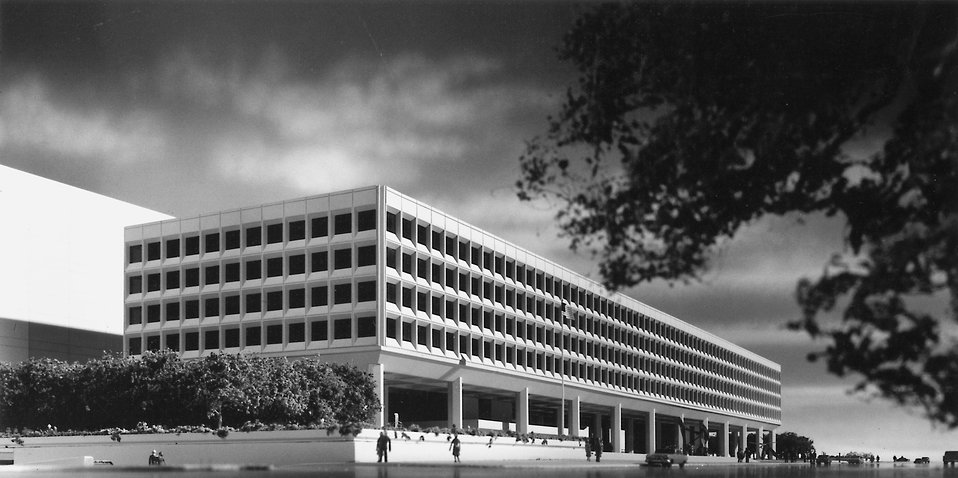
Federal Office building No. 5 Washington DC